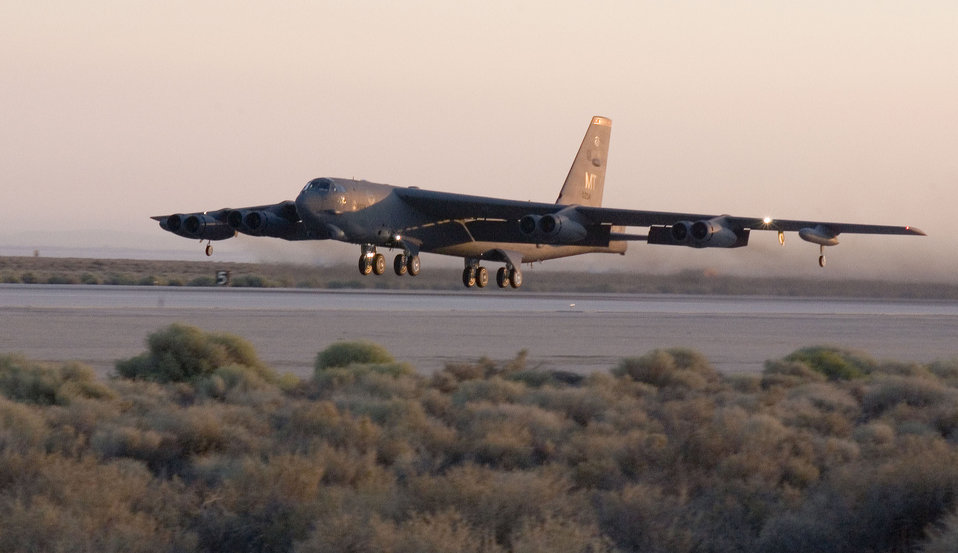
B-52 successfully tests alternative jet engine fuel

A B-52 Stratofortress takes off from Runway 22 during a Fischer-Tropsch test flight from Edwards Air Force Base, Calif., on Sept. 19. During the flight, two of the aircraft's eight engines ran on the natural gas-based Fischer-Tropsch fuel blend. The bombers are from the 5th Bomb Wing at Minot Air Force Base, N.D.